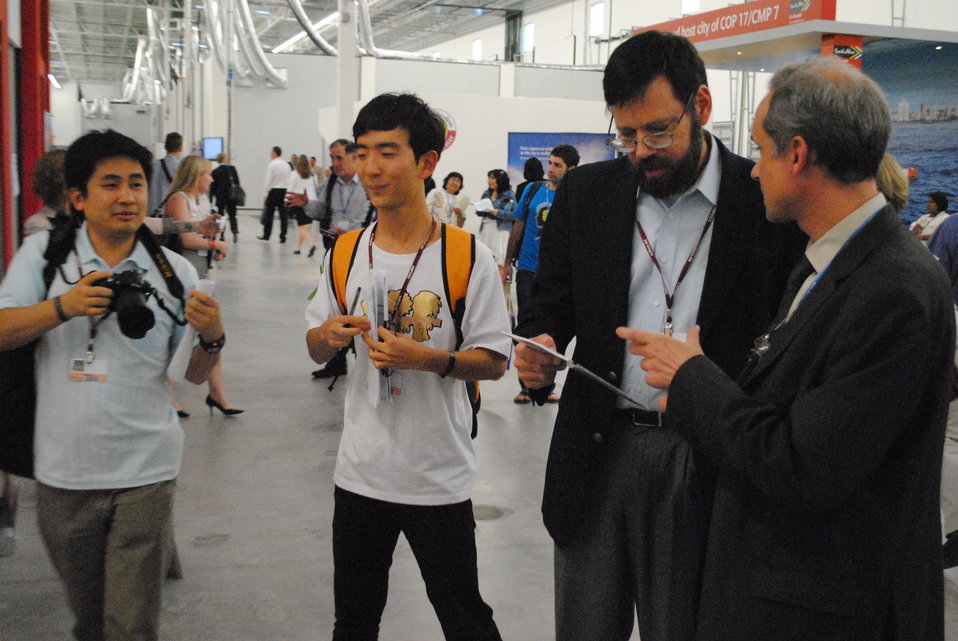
Deputy Special Envoy Pershing Speaks With Members of the Audience

Members of the audience speak with U.S. Deputy Special Envoy for Climate Change Jonathan Pershing after the side event, Enhancing Capacity for Low Emission Development Strategies, at the U.S. Center at COP-16 in Cancun, Mexico, on December 2, 2010.